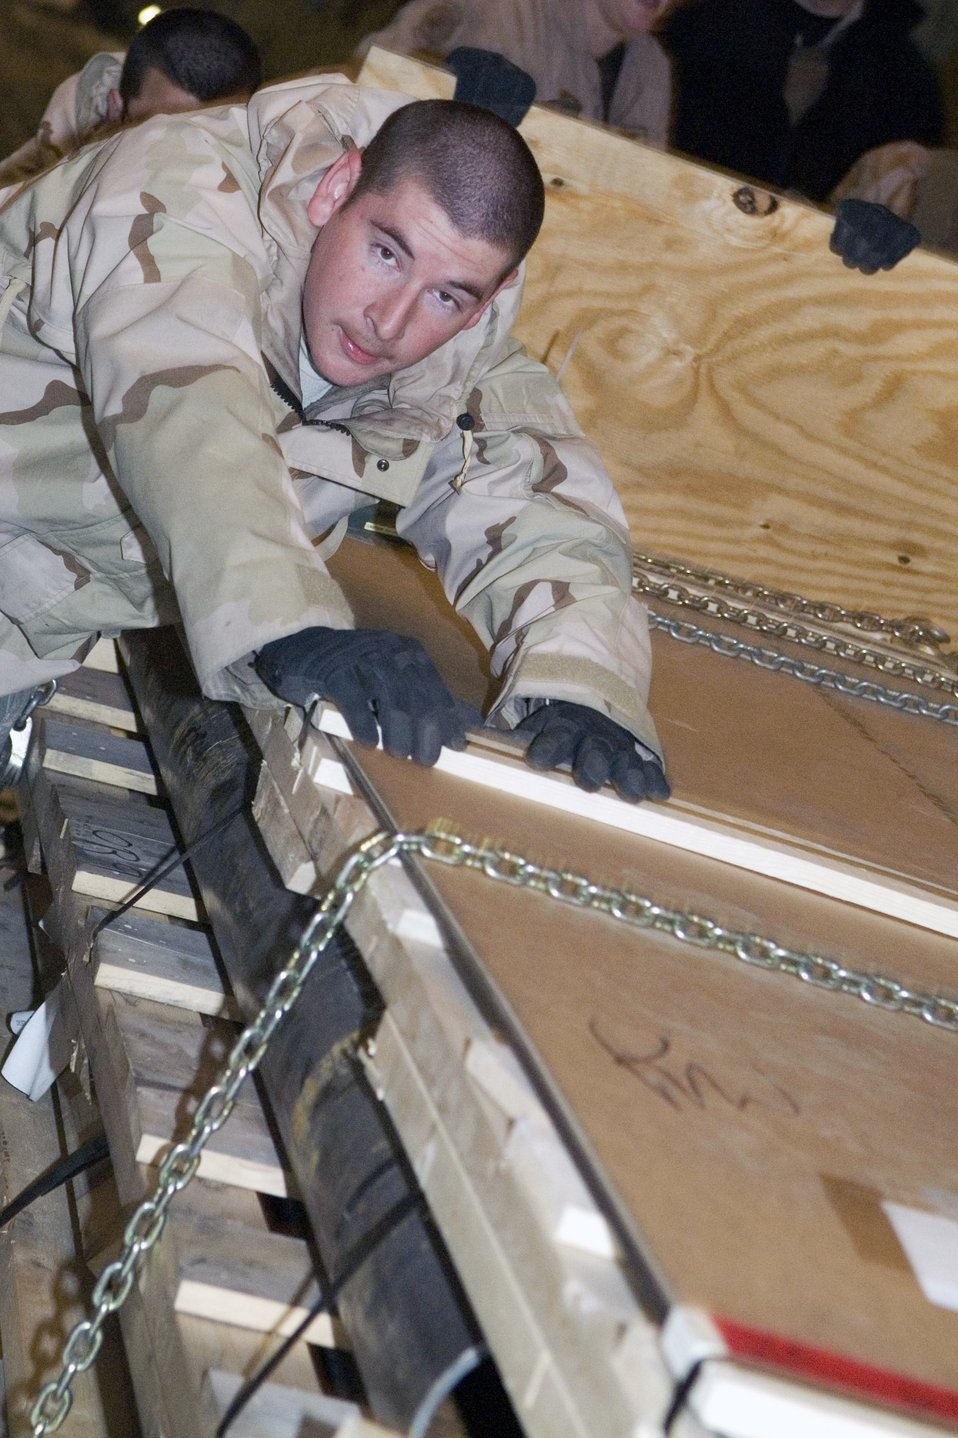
Galaxy quest

Airman 1st Class Terrence West pushes cargo from a C-5 Galaxy Jan. 7 at Balad Air Base, Iraq. Balad AB has the busiest aerial port in the area of responsibility and the air transportation specialists here recently bested their previous record by moving 930 tons of cargo in one day. Airman West, a 332nd Expeditionary Logistics Readiness Squadron air transportation specialist, is deployed from Altus Air Force Base, Okla.